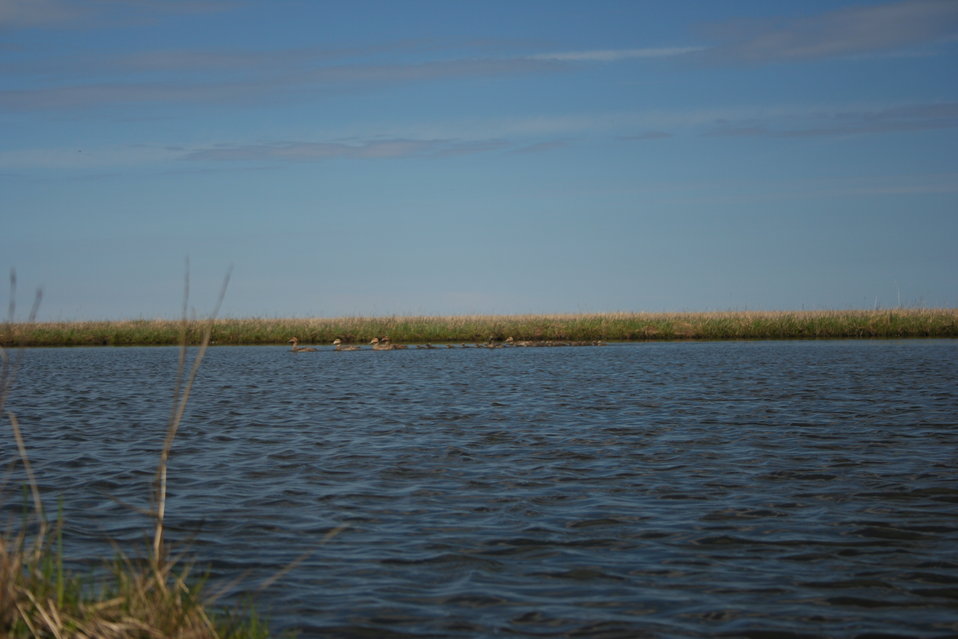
A creche of common eiders

USFWS Yukon Delta NWR